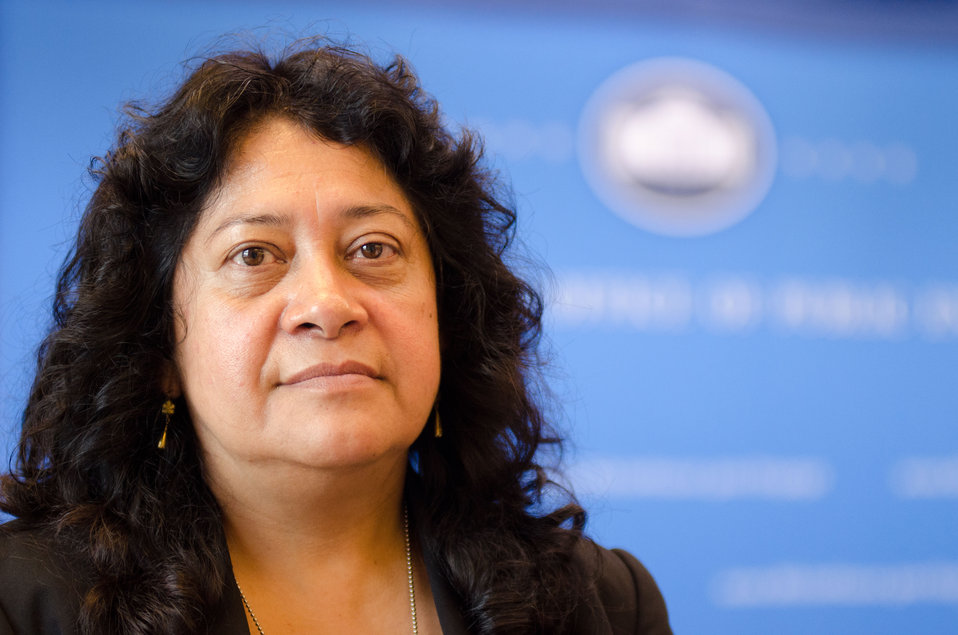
Parents United for Healthy Schools Leader Jovita Flores is one of eleven honorees recognized for their efforts to reduce hunger and increase food security in the U.S. and internationally at the White House Champions of Change Strengthening Food Security at Home and Abroad Event held at the White House on Thursday, September 6, 2012.